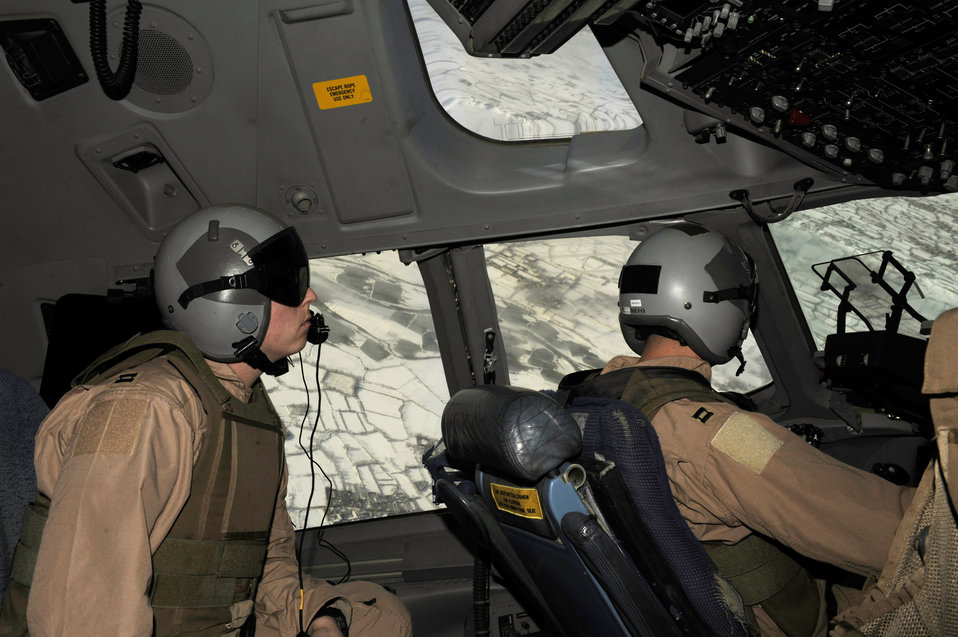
Airmen deliver 1 million pounds of supplies in 42 days

Captain Matt Pinkerton (left) scans the horizon while Capt. Joe Beal (right) flies a mission in a C-17 Globemaster III Feb. 14 over Afghanistan. Captains Pinkerton and Beal are C-17 pilots from the 816th Expeditionary Airlift Squadron.